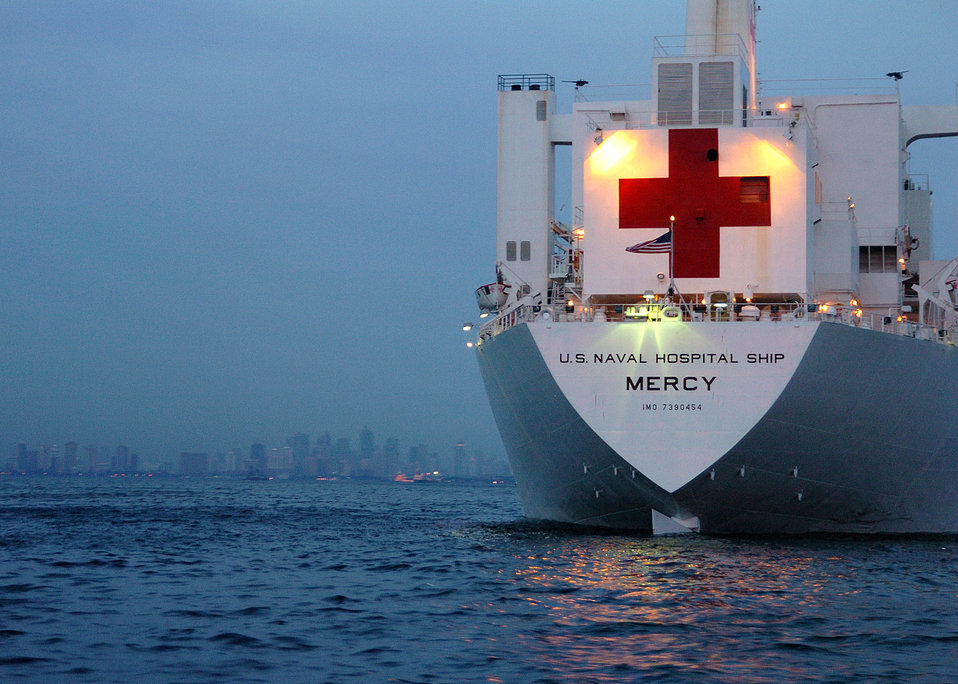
Airmen set sail aboard USNS Mercy for humanitarian mission

The U.S. Navy hospital ship USNS Mercy is anchored off the coast of Manila, the Philippines. Three Airmen from the 374th Medical Group at Yokota Air Base, Japan, are deployed on the ship as it delivers aid and humanitarian assistance to Southeast Asia.